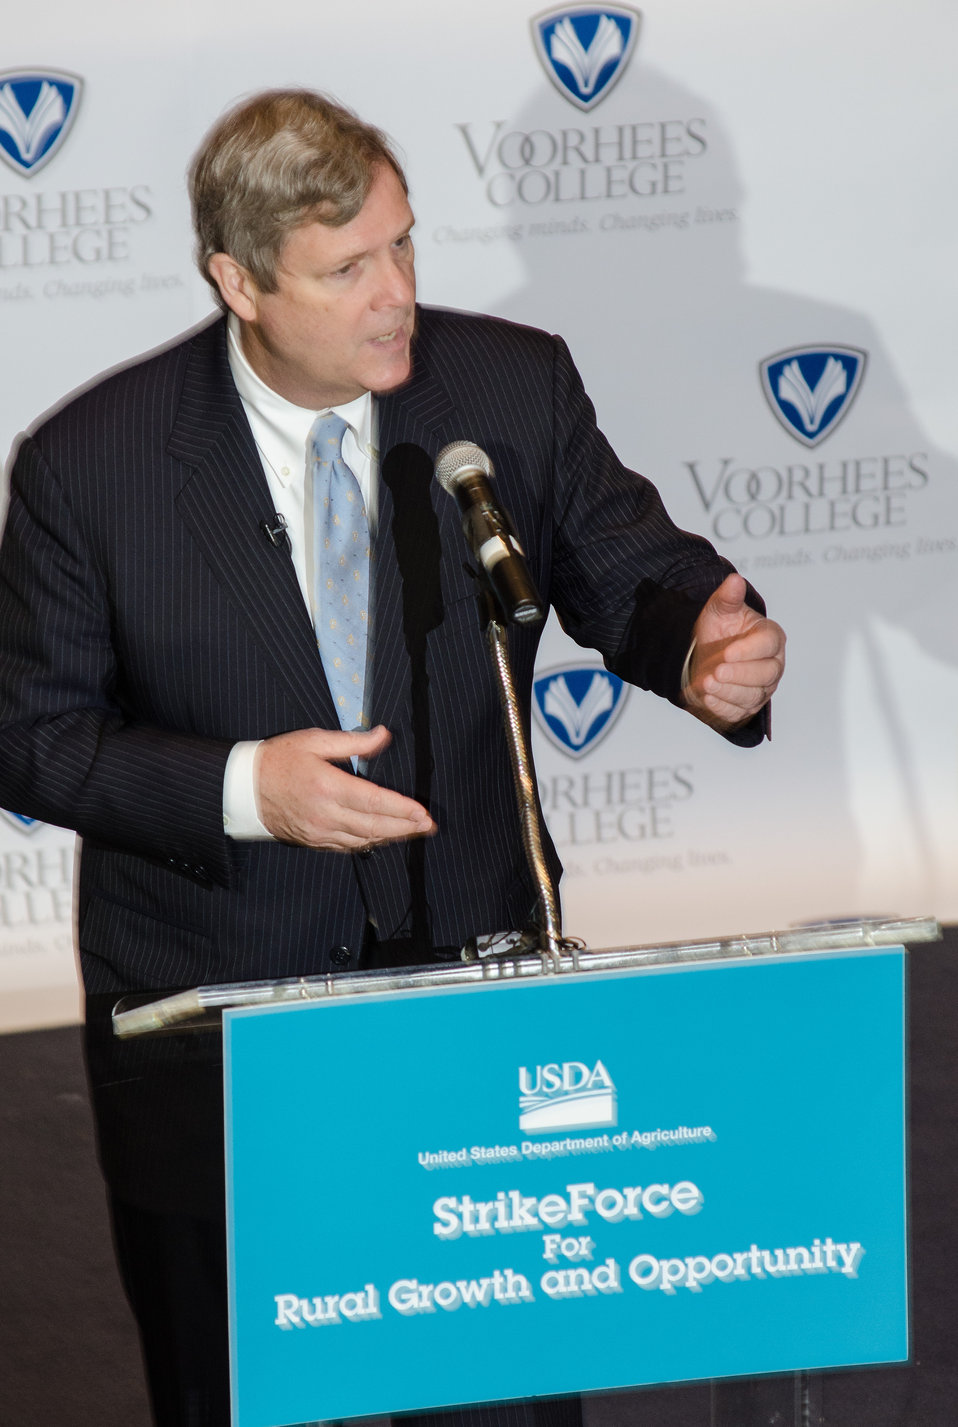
Agriculture Secretary Tom Vilsack speaks at the U.S. Department of Agriculture's (USDA) Strike Force for Rural Growth and Opportunity event held at Voorhees College in Denmark, SC, on Tuesday, Mar. 26, 2013. The primary goal of the Strike Force initiative is to increase partnership with rural communities and leverage community resources in targeted, persistent poverty areas. Vilsack noted that through the Strike Force initiative, USDA will do more to partner with local and state governments and community organizations on projects that promote economic development and job creation.